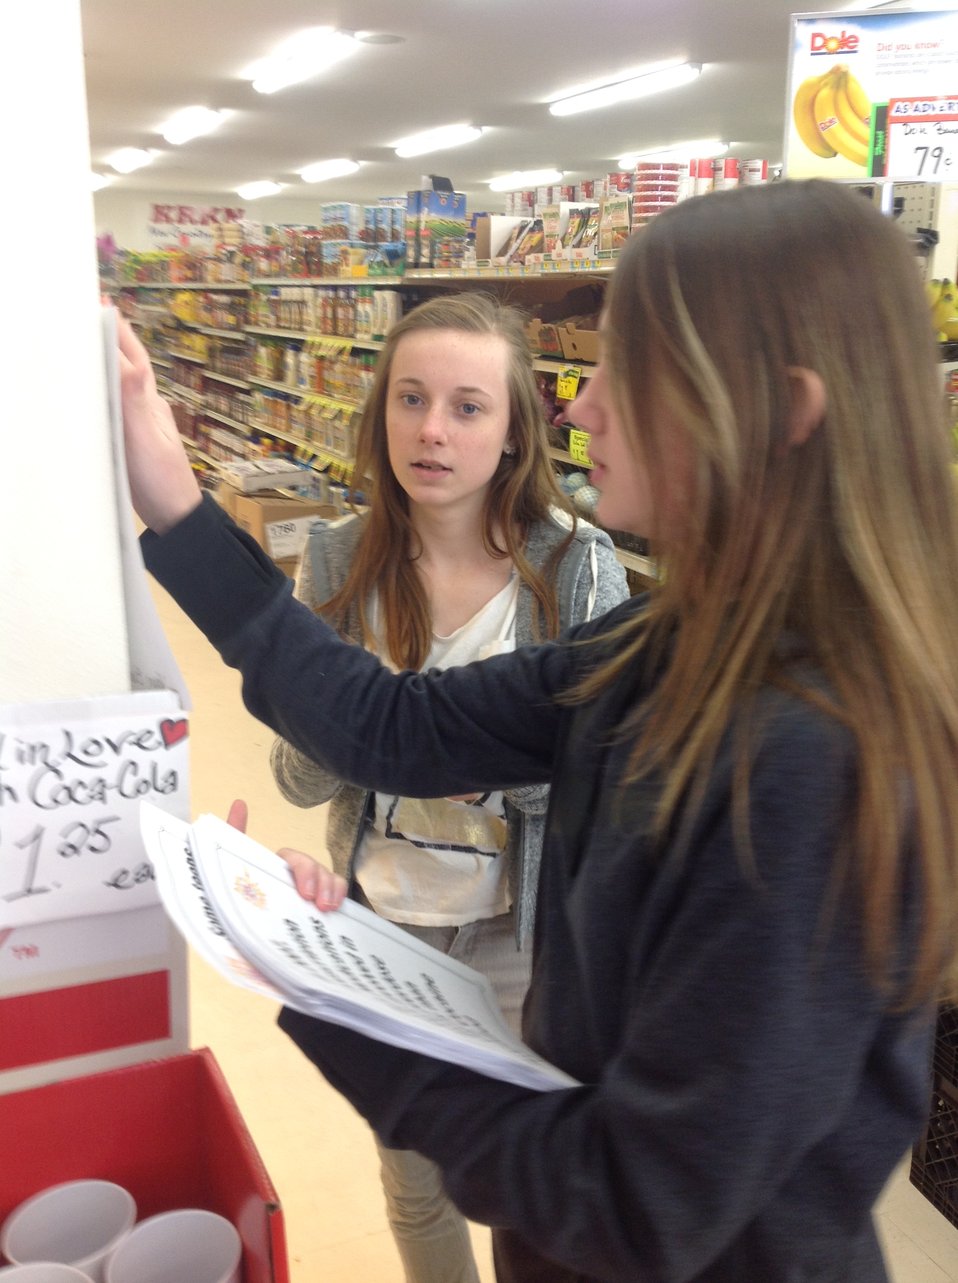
Getting the Word Out

Teenagers from the Van Buren County SAFE Coalition's, Youth Leadership Council (YLC) in Keosauqua, Iowa participate in various events during National Drug Facts Week, 2014.